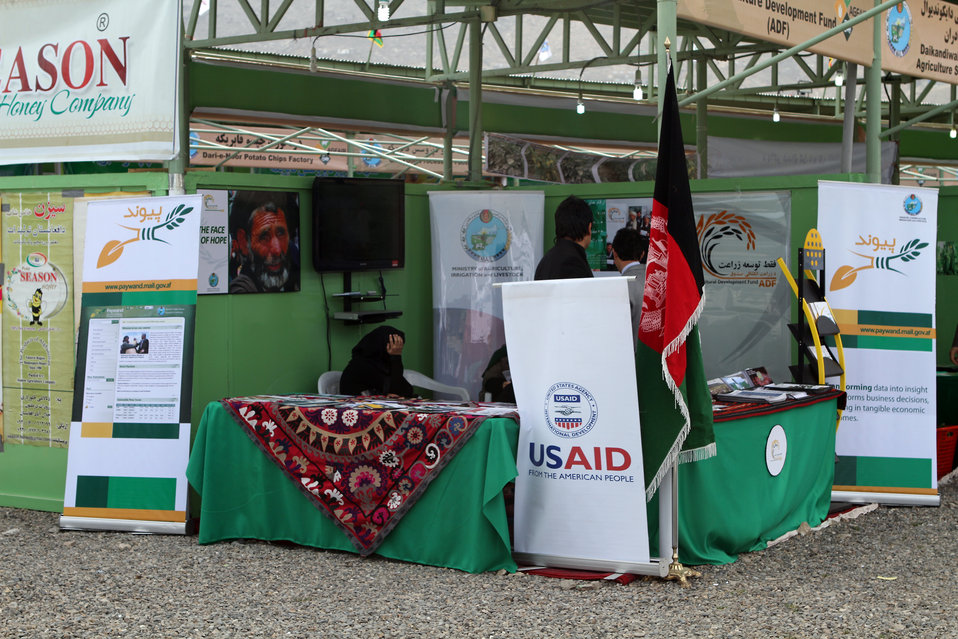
Agfair event